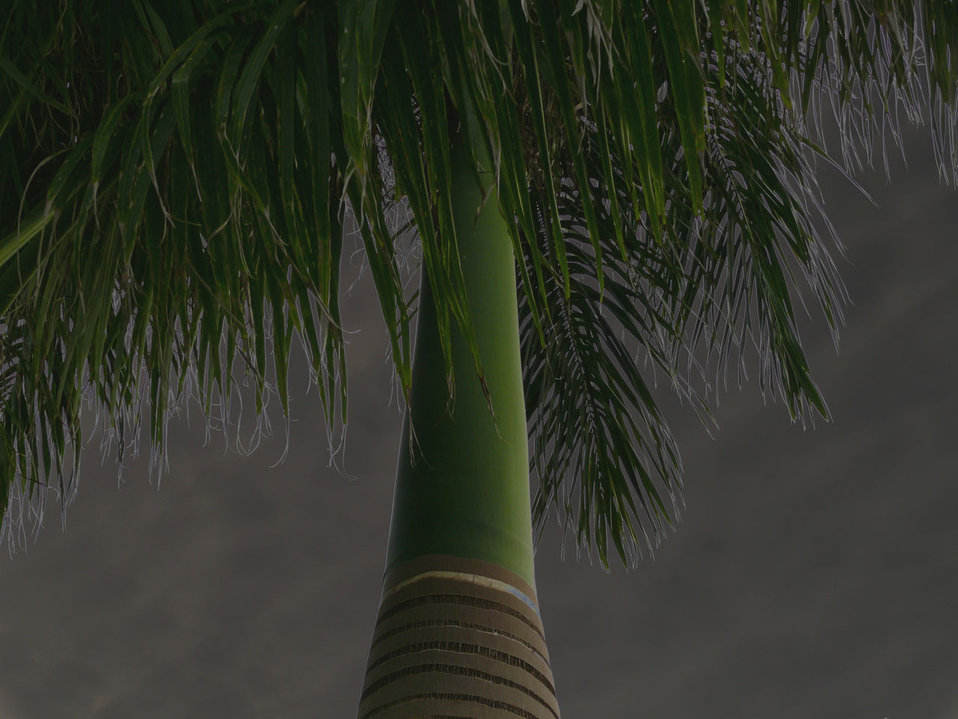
Palm tree on the beach.